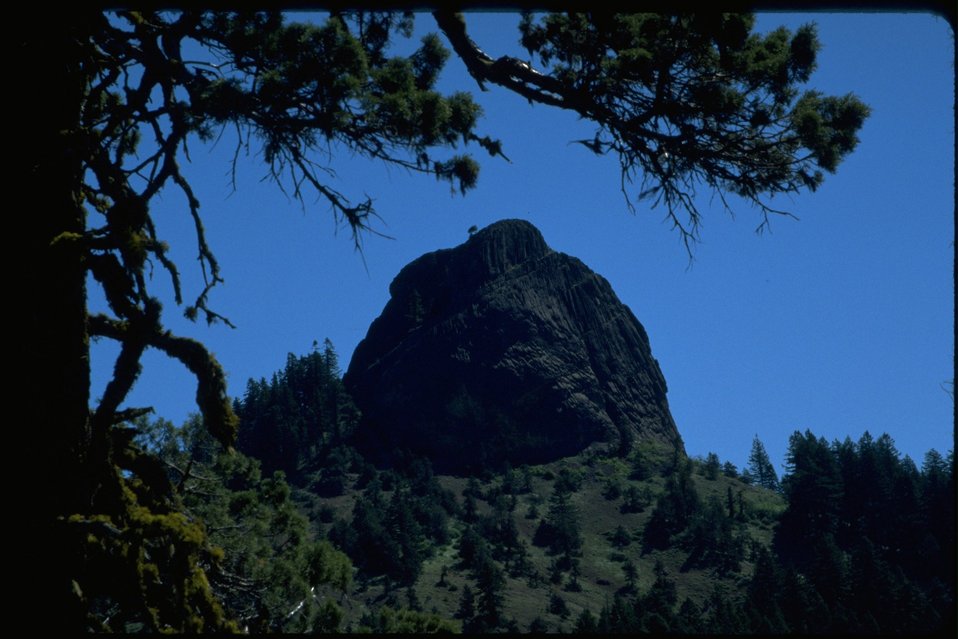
Pilot Rock from wildflower meadow Cascade-Siskiyou National Monument (CSNM).